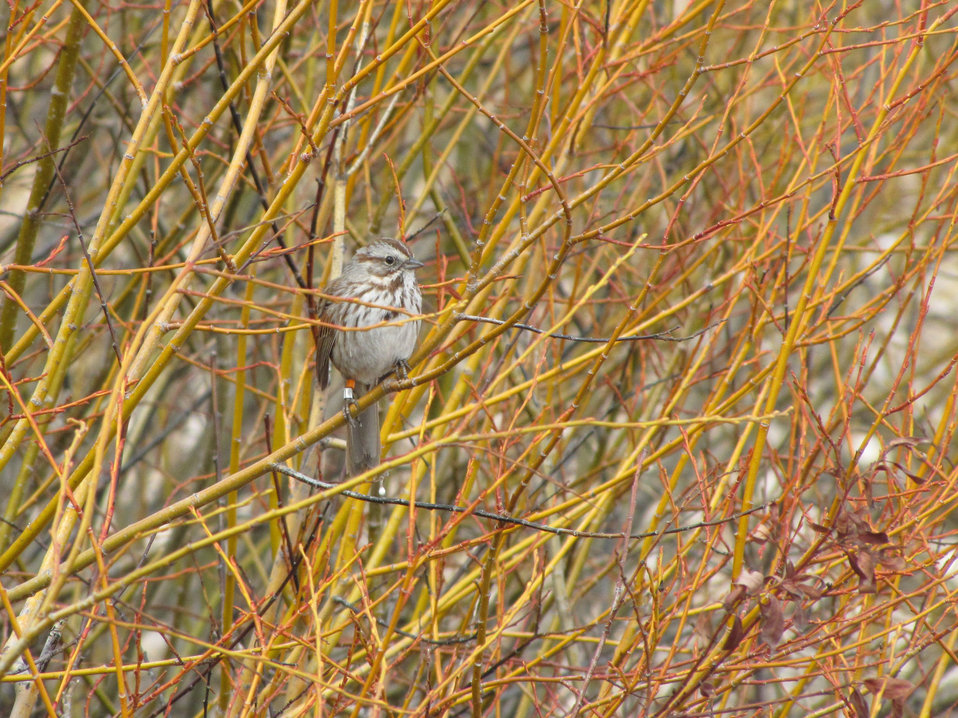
Large-Scale Research in a Small Package

At a quick glance, this appears to be just a photo of a sparrow in a colorful cover of willows. If you look closely, though, you'll see an band on the small bird's leg (which the photographer didn't notice until the image was downloaded and viewed on a computer).

Bird banding is a common tool used to learn more about various bird species, including their migration routes, ranges, and life-spans.